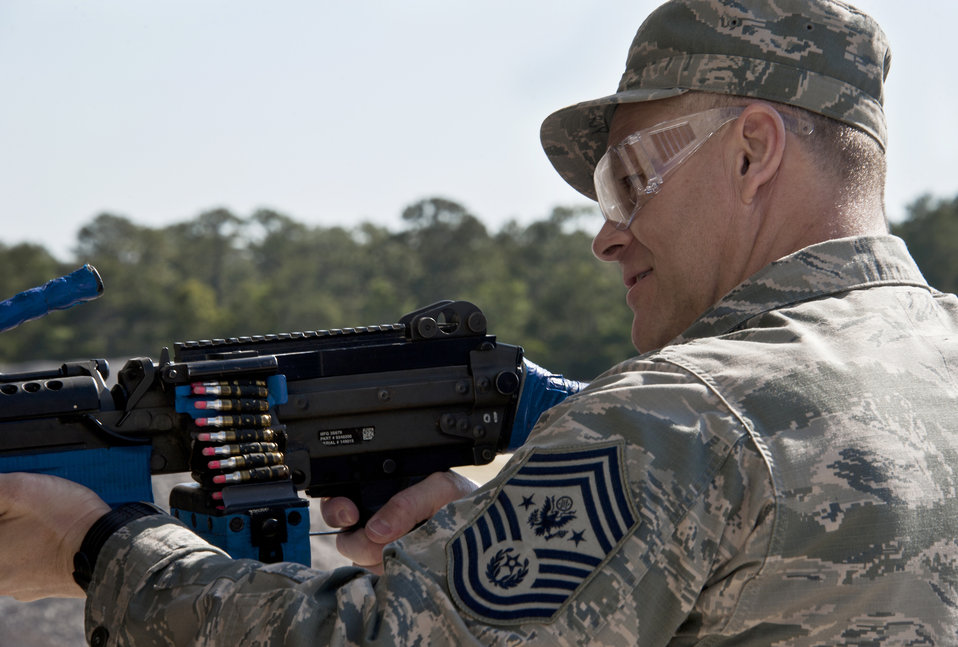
Chief Roy visits 96 GCTS

Chief Master Sgt. of the Air Force James A. Roy takes aim at a target inside a building with a simulated munition-loaded M-249 during his tour of the 96th Ground Combat Training Squadron's training area May 6, 2011, at Eglin Air Force Base, Fla. The chief received a hands-on